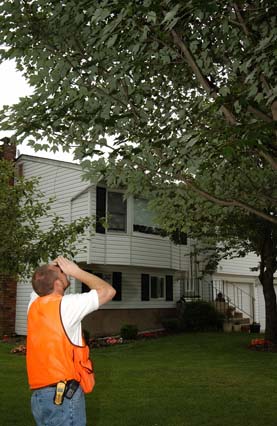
Using binoculars can help residents cheResidents use binoculars to check for signs of the Asian Longhorned Beetle (ALB) high in the canopy of susceptible trees. The ALB is an invasive species that has destroyed thousands of trees throughout the U.S. The U.S. Department of Agriculture’s (USDA) Animal and Plant Health Inspection Service (APHIS), the U.S. Forest Service, the Nature Conservancy, and American Forests held a joint news conference at the National Press Club on July 29, 2013 to urge the public to report signs of the invasive pest that threatens recreational areas, forests, and suburban and urban shade trees. These agencies have named August “Tree Check Month” in order to encourage the public to examine their trees for signs of ALB. USDA photo by R. Anson Eaglin.k for signs of ALB high in the canopy of susceptible trees.